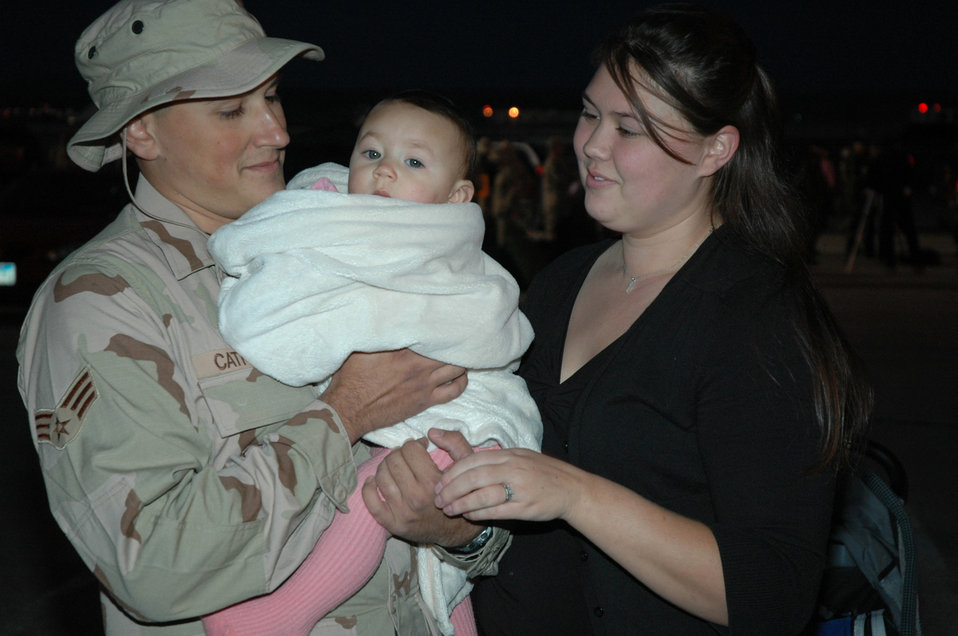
Preparing to deploy

Senior Airman Anthony Cathcart, his wife, Jaclyn, and son, Payton, spend a few moments together before Airman Cathcart leaves for his deployment to Southwest Asia in September.